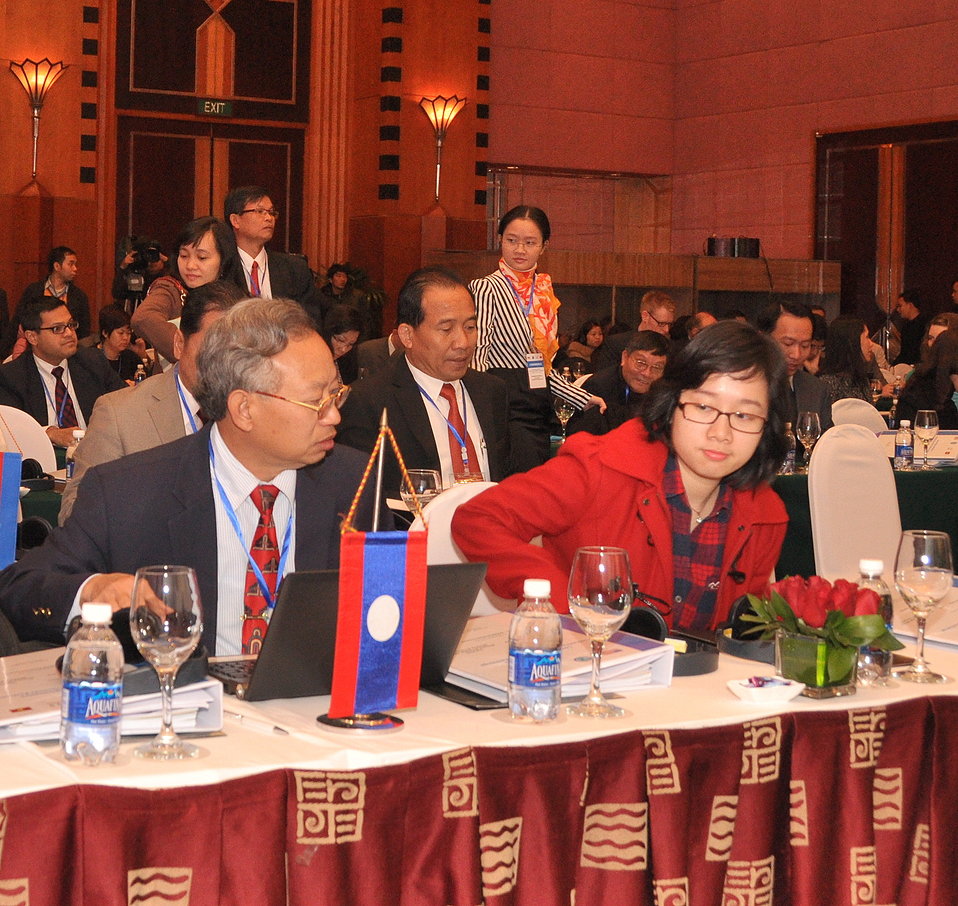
Delegates to the LMI Infrastructure Best Practices Exchange

Hanoi: January 14, 2013